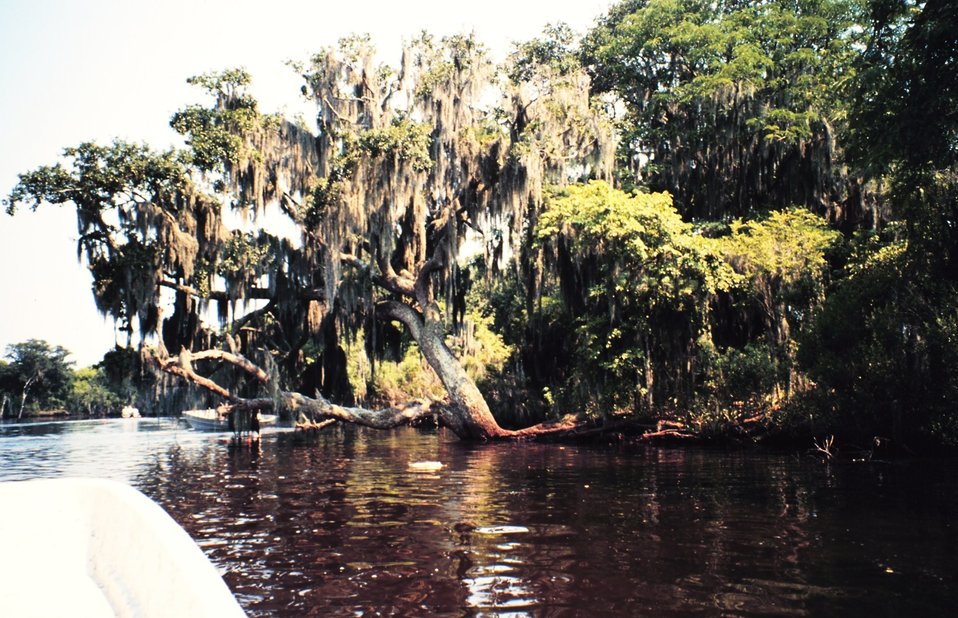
Live oak above canal along lower Mississippi River just above the delta